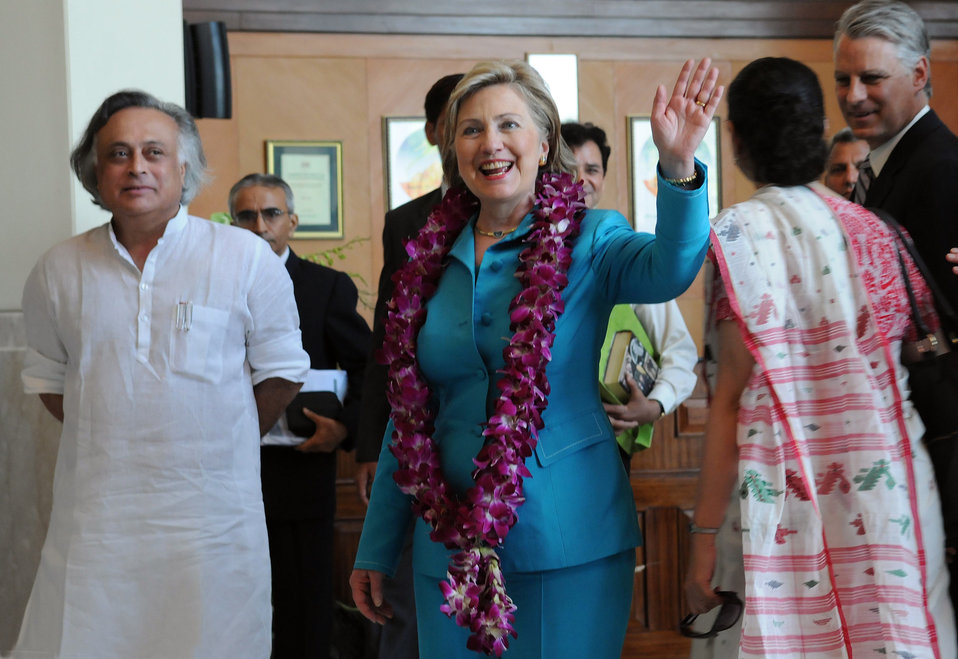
Secretary Clinton Visits ITC Green Center

U.S. Secretary of State Hillary Rodham Clinton greets the crowd at the ITC Green Center in Gurgaon, outside of New Delhi, India July 19, 2009. To her left is Minister for Environment and Forests Jairam Ramesh, to her right (back to camera) Meera Shankar, Indian Ambassador to the U.S., and Timothy J. Roemer, U.S. Ambassador-Designate to India, India July 19, 2009.